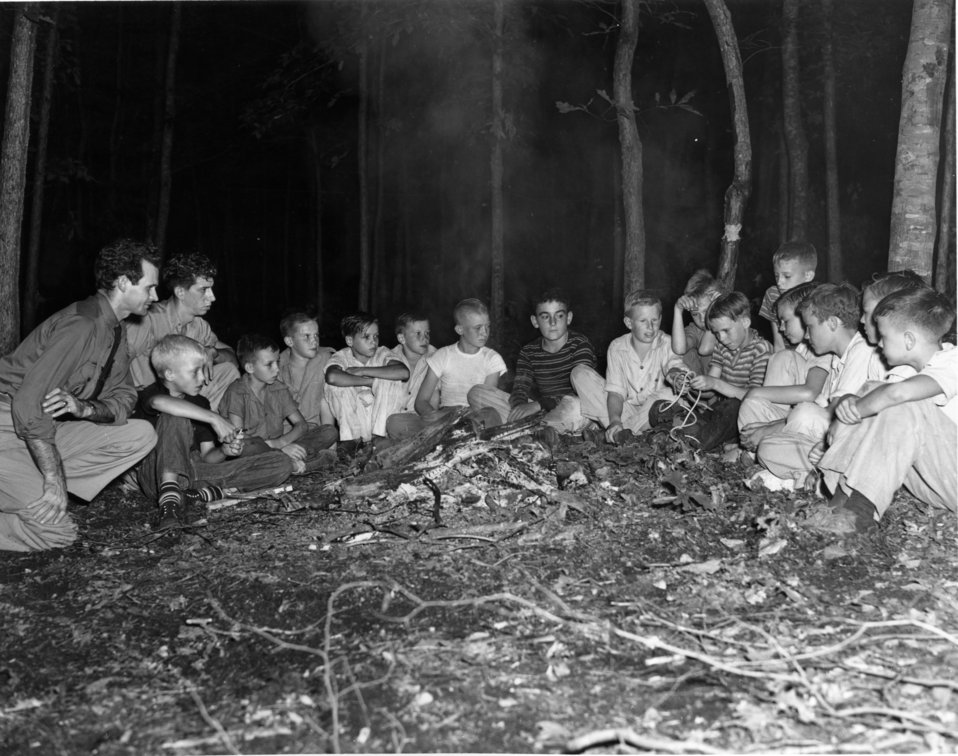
Recreation at Oak Ridge